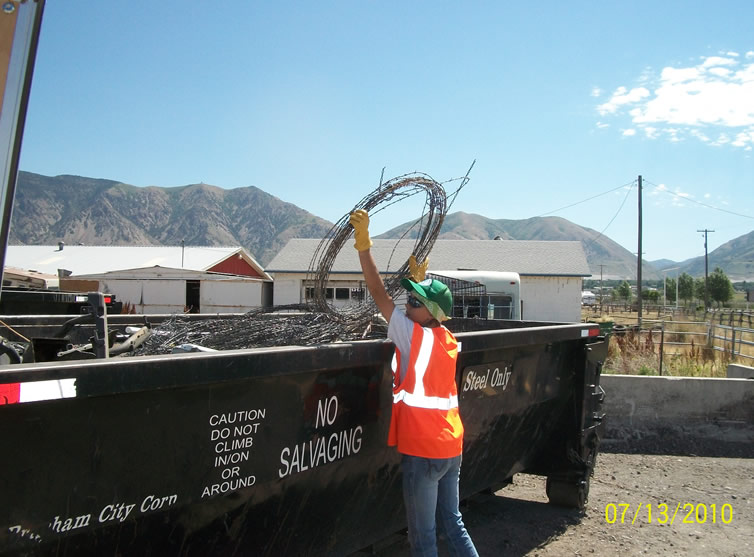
Recycling barbed wire

Youth Conservation Corps participant recycles barbed wire from the removal of a barbed wire fence.